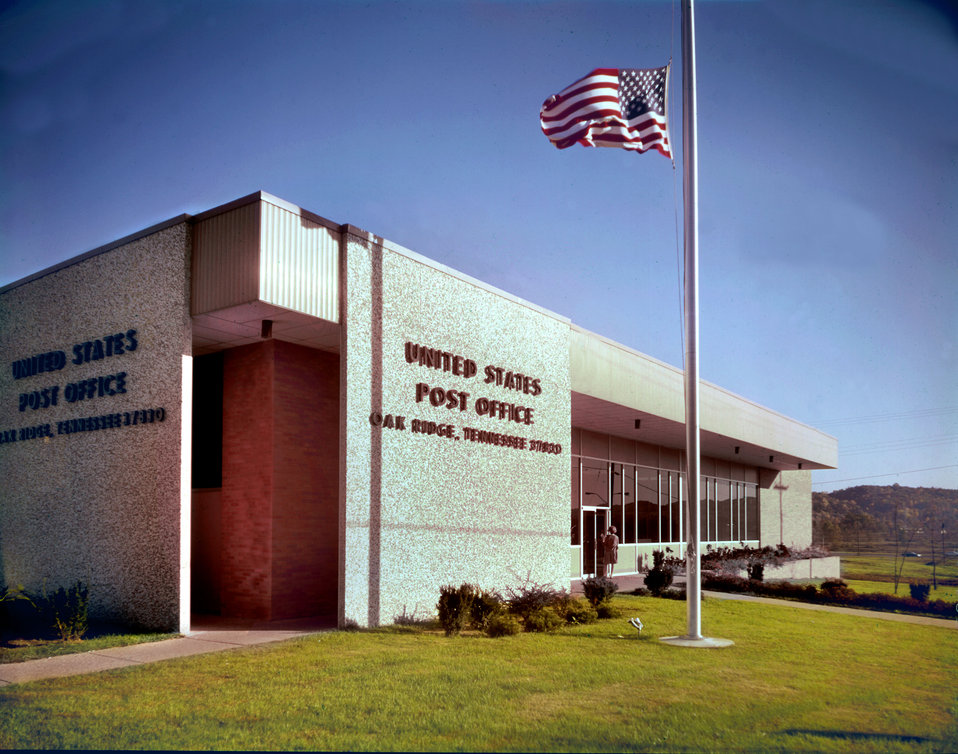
Oak Ridge Post Office

DOE photo by Ed Westcott 1960s Oak Ridge Tennessee